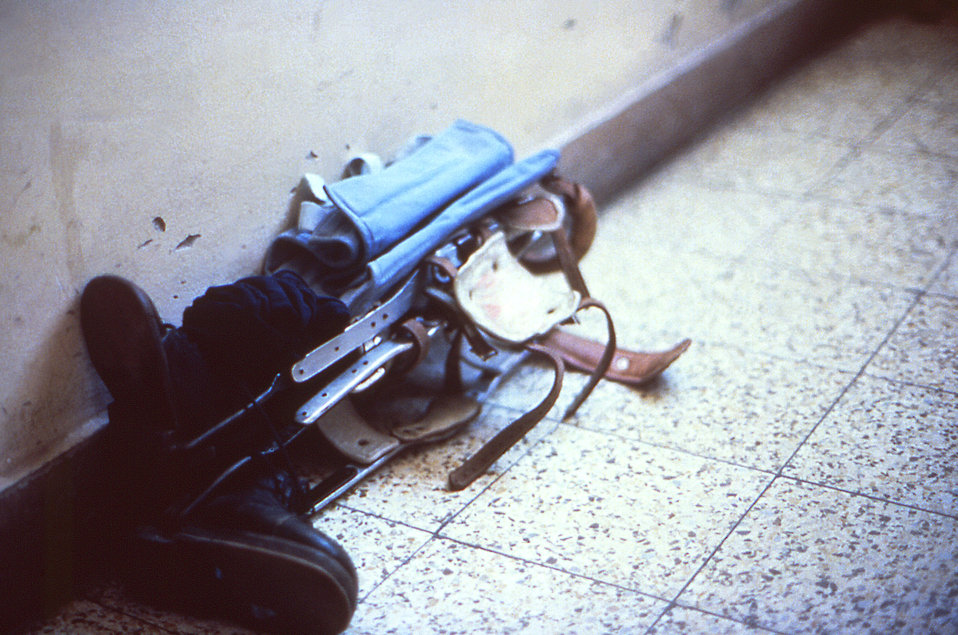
This 1989 photograph depicted a polio patient's lower limb leg splints lying on a tiled floor, which when worn by a polio victim who's lower limbs had become paralyzed, would help the person maintain an upright position.